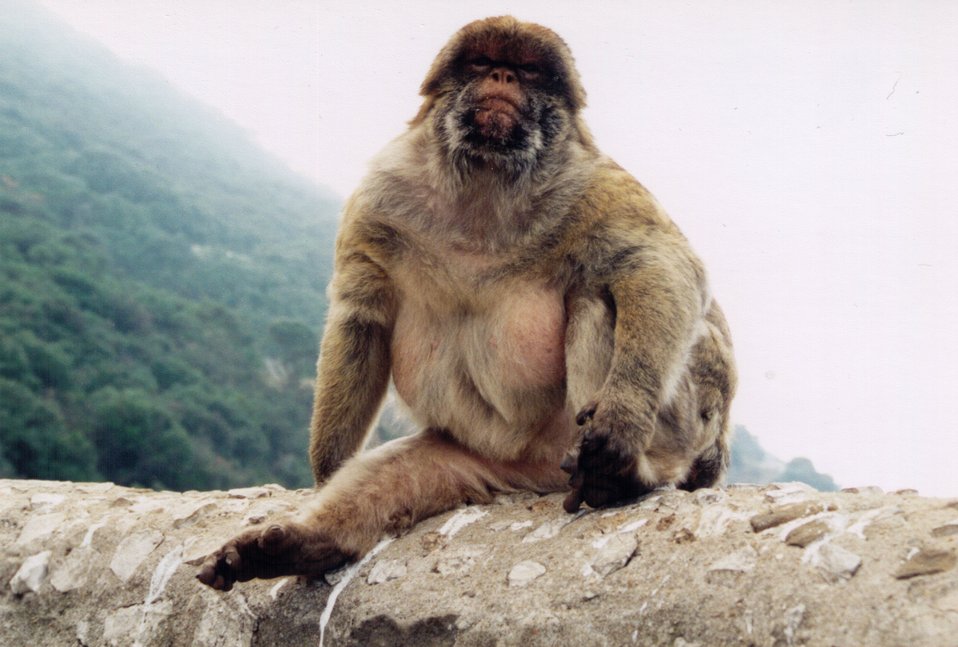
Deutsch: Berberaffenm√§nnchen